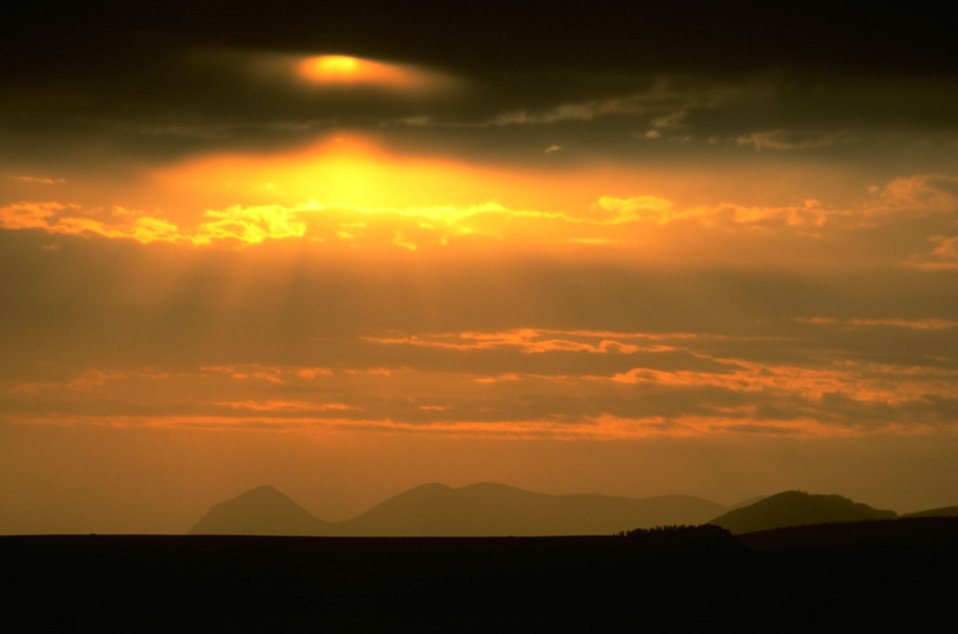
Sunset over the Missouri Breaks